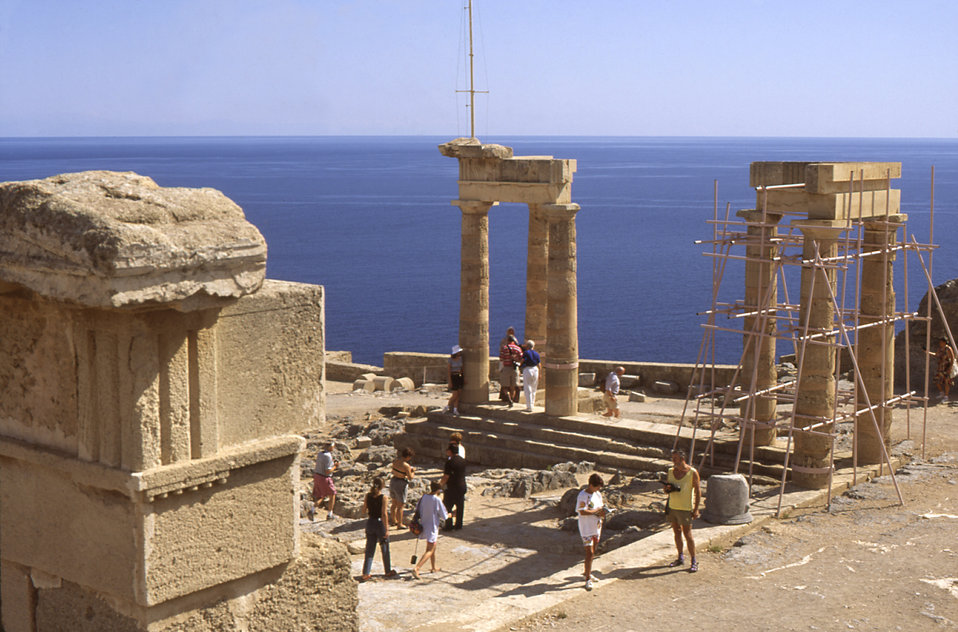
This 1993 photograph depicted a number of tourists sight-seeing amongst the ruins of the ancient Acropolis, outside the Greek city of Lindo, on the Isle of Rhodes. Inside the Acropolis are both ancient, and medieval buildings. Archeological sites throughout the sun-washed Mediterranean are popular tourist destinations for travelers from all over the world. Despite the visual beauty, travelers need to be aware of the potential health hazards associated with travel, be it foreign, or domestic.